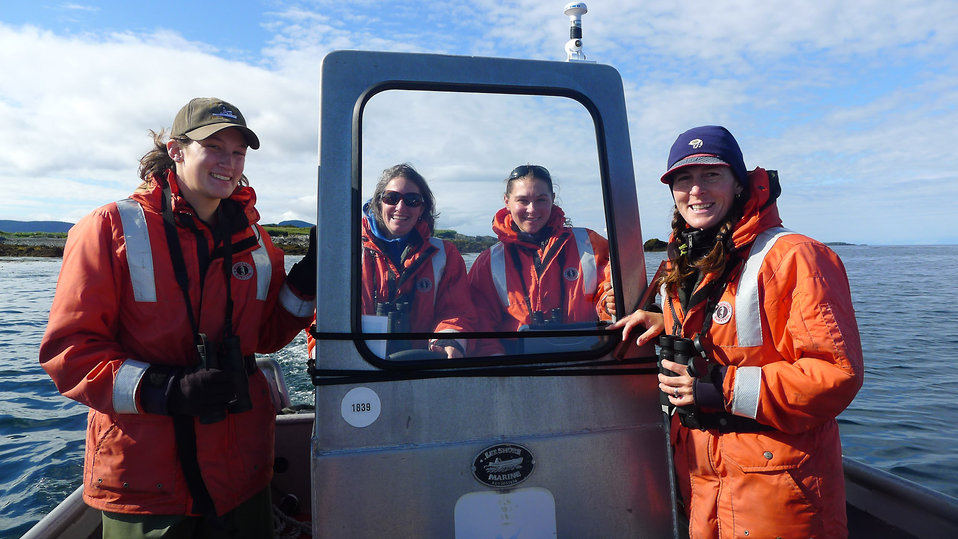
Volunteers with biologist Robin Corcoran: August 2012 Nearshore Marine Bird Survey

Photo Credit: Lisa Hupp/USFWS
Source: Kodiak NWR